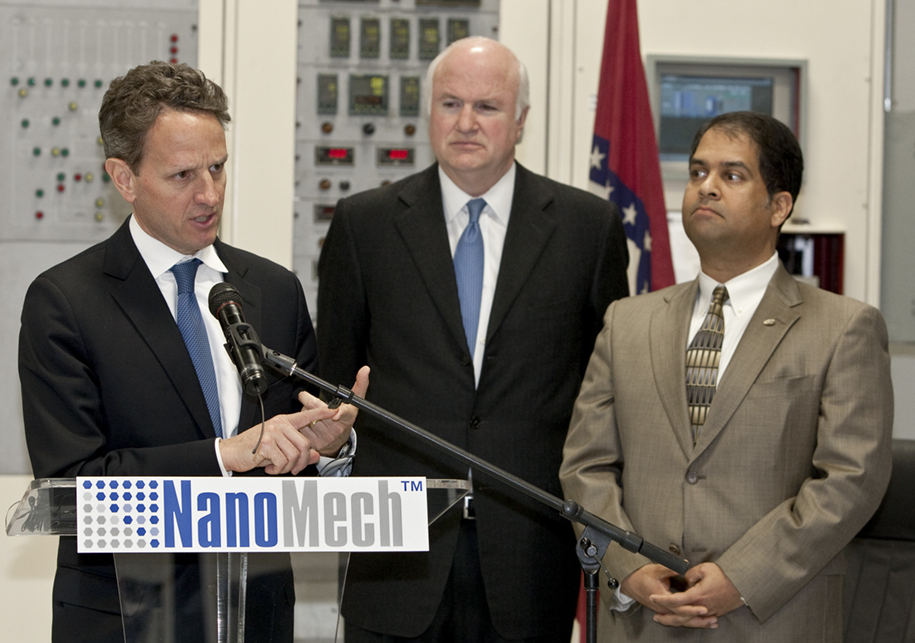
VIsit to Northwest Arkansas, 3/25/2011

“Across the United States, not just in Silicon Valley or the Research Triangle, despite the damage caused by this crisis, despite all the challenges we have as a nation, and despite stronger competition from around the world, American companies are designing and building the products of the future, demonstrating the fundamental dynamism and resilience of the American economy,” Secretary Geithner said during his visit to Nanomech in Northwest Arkansas. “This community and this company can help Americans understand our strengths, help Americans appreciate what it is going to take to win the future, and help Americans be confident that we can meet that challenge.”